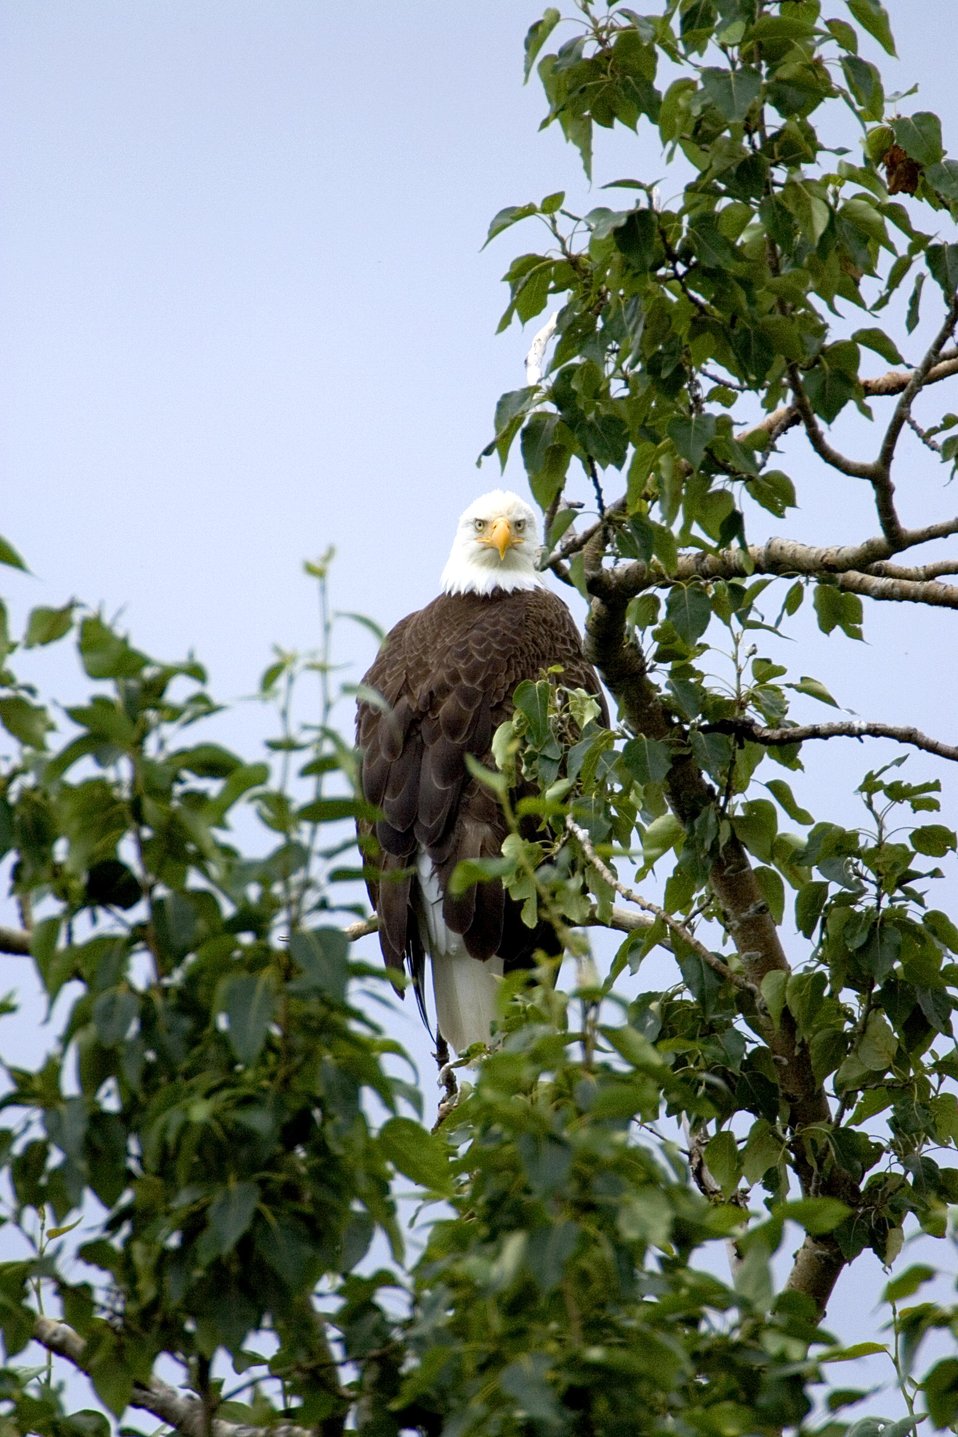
Wildlife of Kodiak Refuge

Bald Eagle